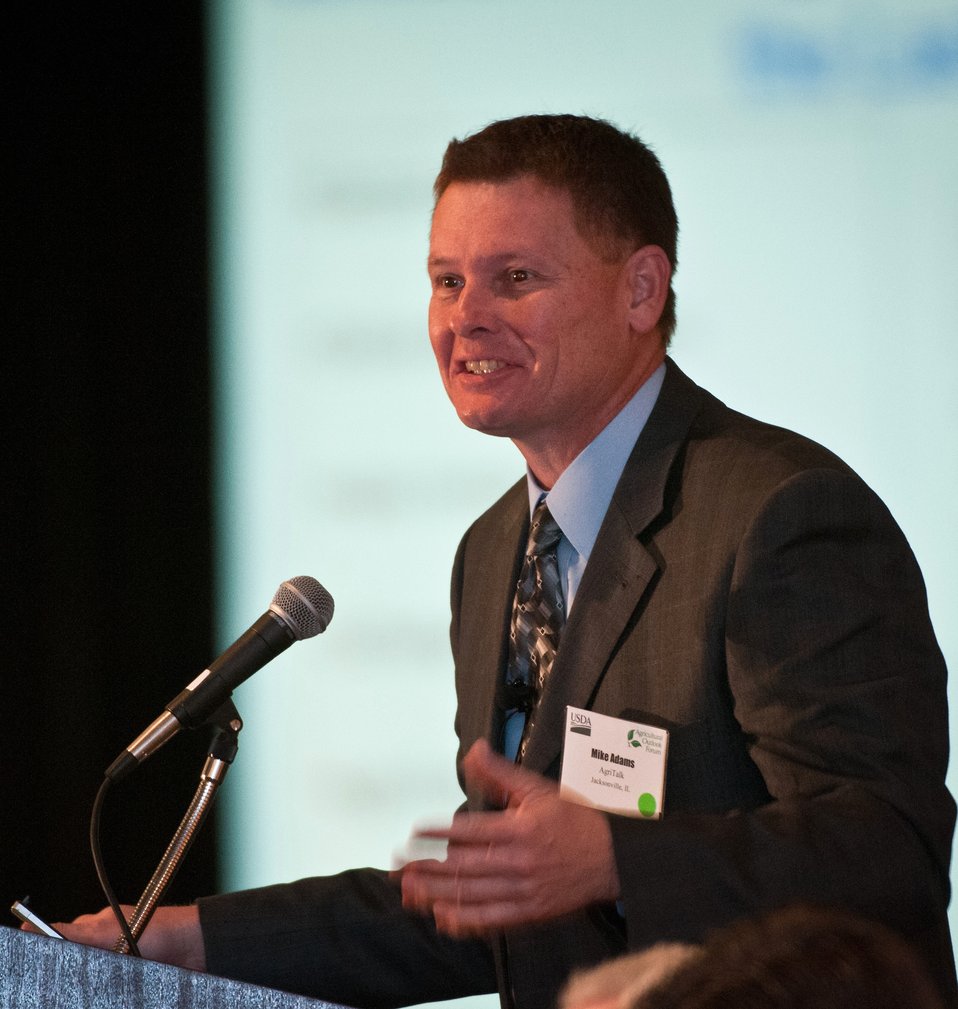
AgriTalk Radio's Mike Adams speaks during the 'Plenary Panel: Managing Risk in Today's Markets' during the 2013 Agricultural Outlook Forum, held at the Crystal Gateway Marriott Hotel, Arlington, Virginia on Thursday, Feb. 21, 2013. This annual Forum brings together producers, policymakers, and business, government, and industry leaders to meet, exchange ideas, and discuss timely agriculture issues.